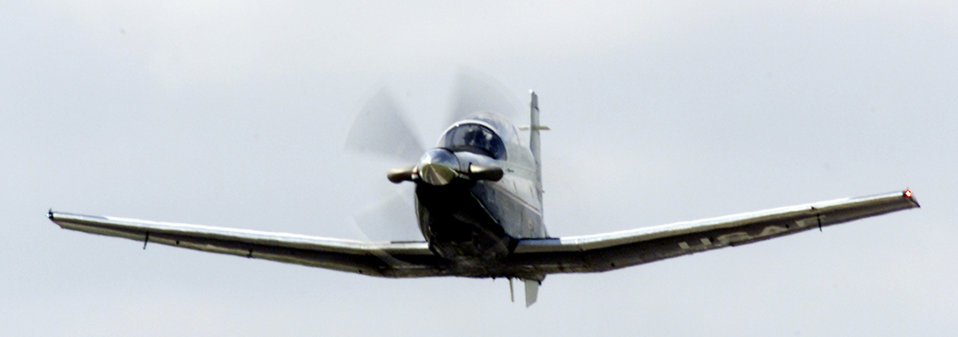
Front view Texan

RANDOLPH AIR FORCE BASE, Texas -- Maj. Todd Daggett, T-6A Texan II Demonstration Team show pilot and team chief, flies low and fast in Air Education and Training Command's newest trainer.